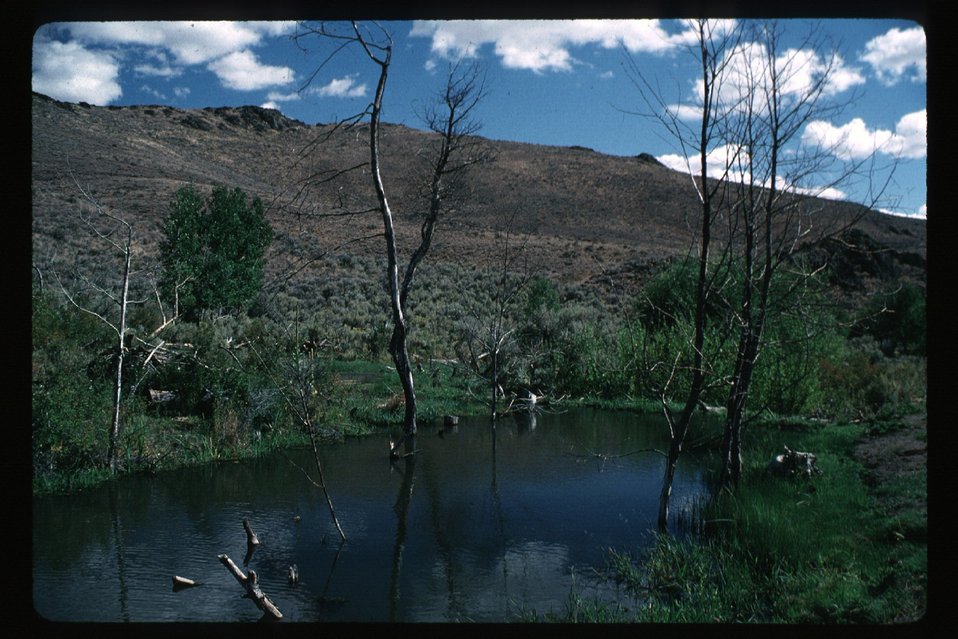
Riparian Shoshone Field Office Silver Creek